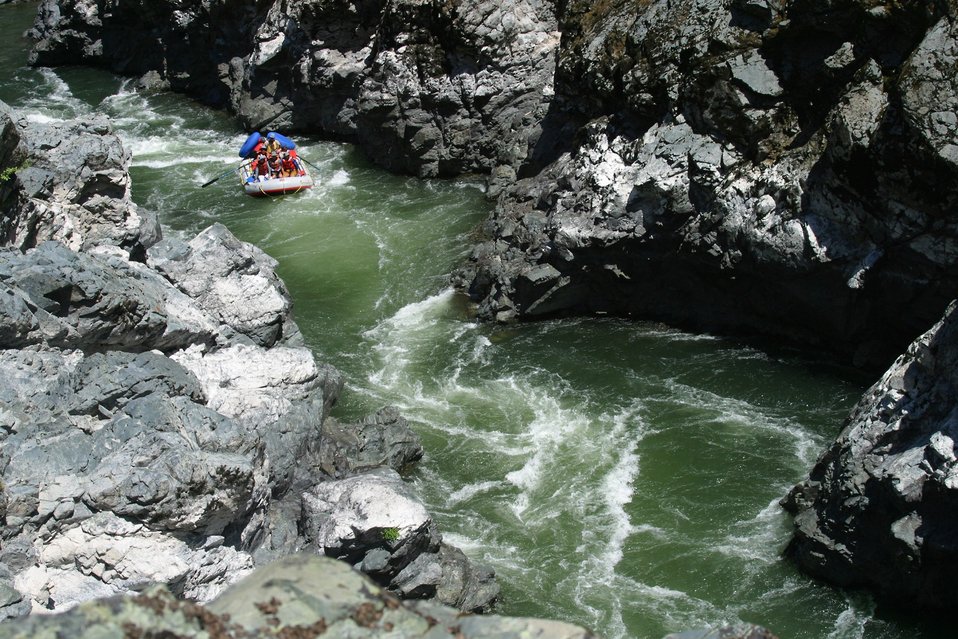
The Coffee Pot